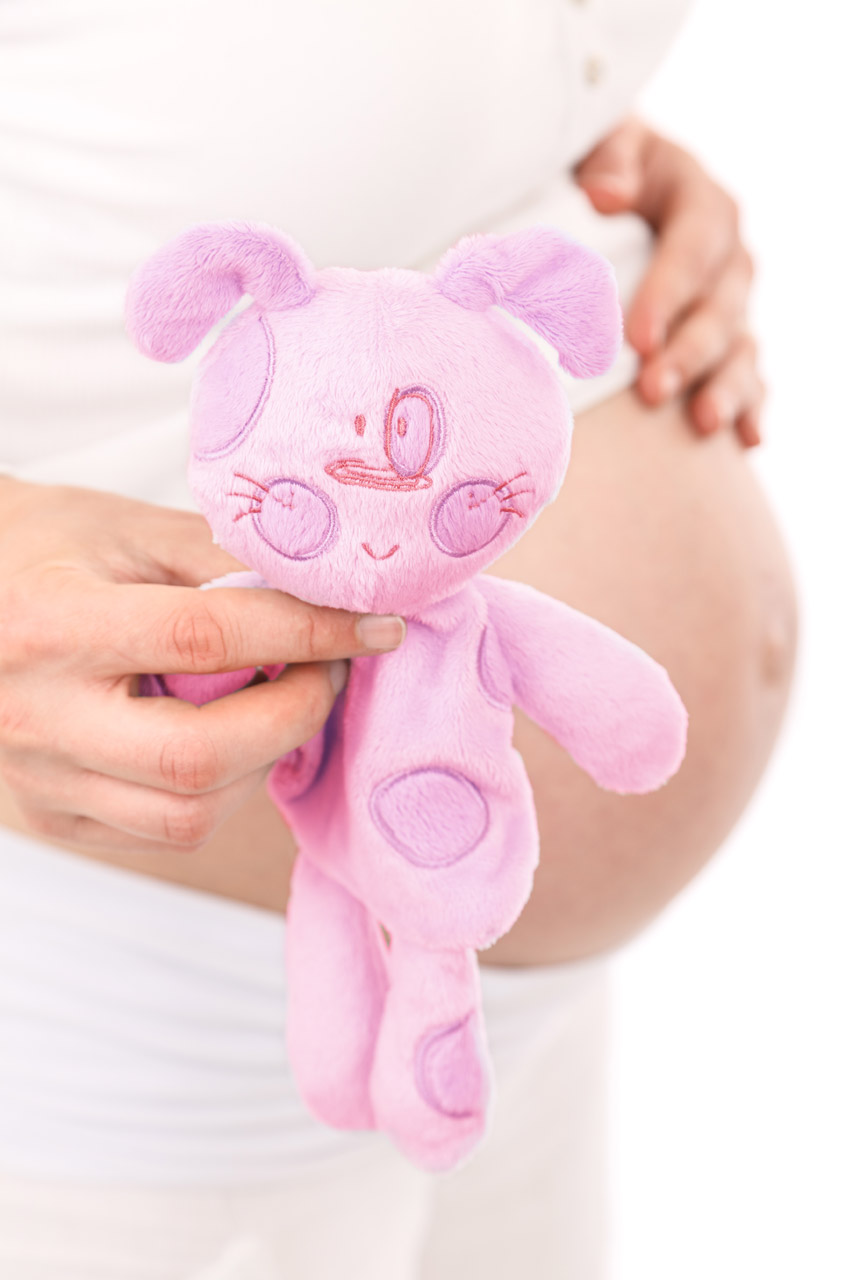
Expecting a baby girl

Pink rabbit toy for a baby girl.